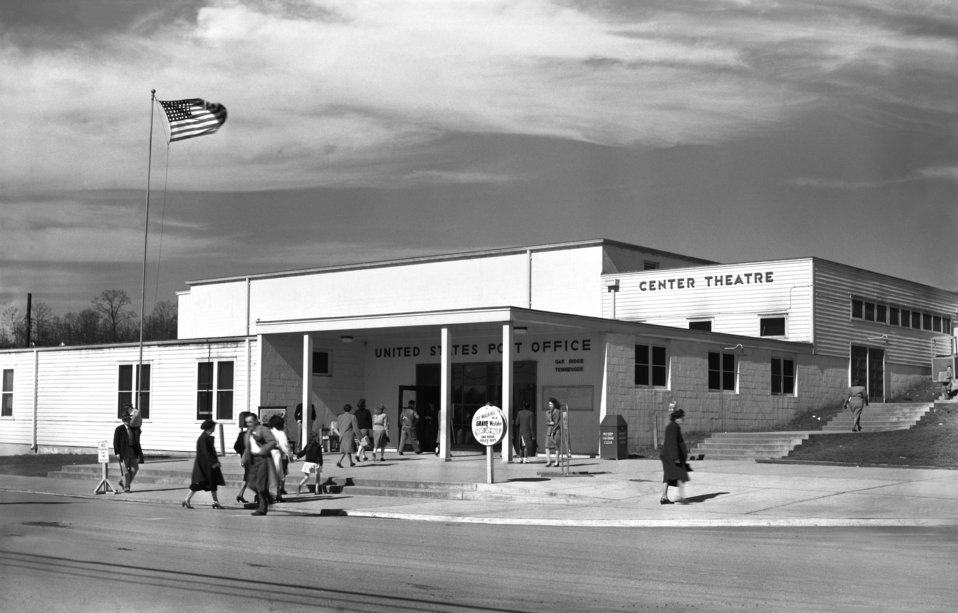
U.S. Post Office Oak Ridge 1948

4360 DOE photo Ed Westcott 3-6-1948 Oak Ridge Tennessee